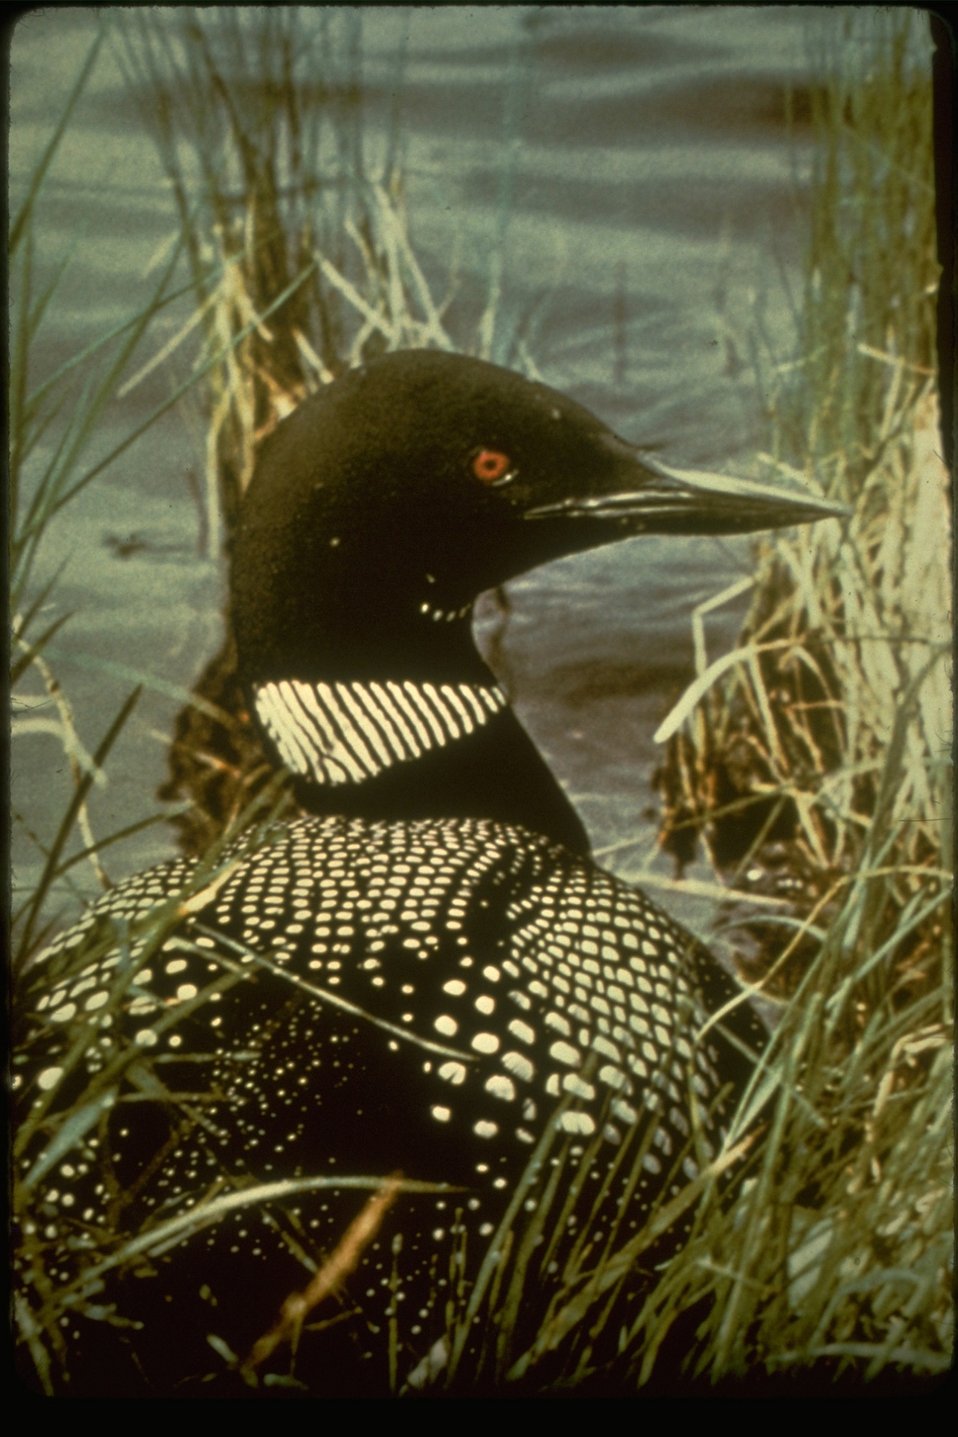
A Common Loon sitting in a grassy pond.